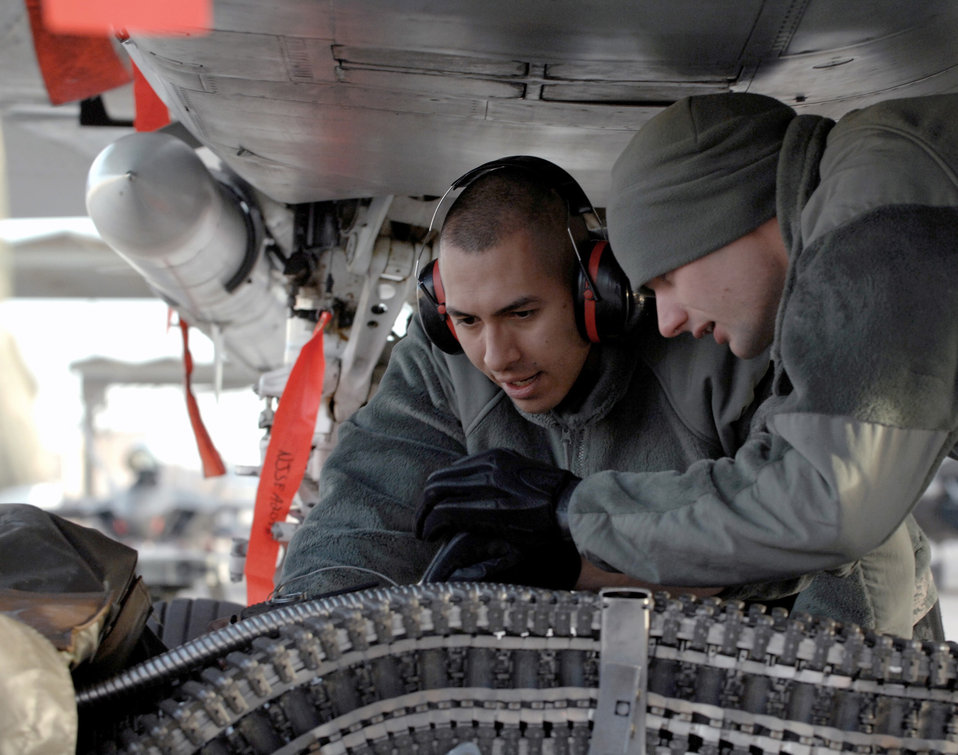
Making it go round and round

Staff Sgt. John Castro (left) and Airman 1st Class Josh Stephenson load M-61A1 20mm rounds in an F-15 Eagle during a weapons load competition Jan. 14, 2011, on the flightline at Nellis Air Force Base, Nev. The Airmen are armament systems specialists with the 757th Aircraft Maintenance Squadron.